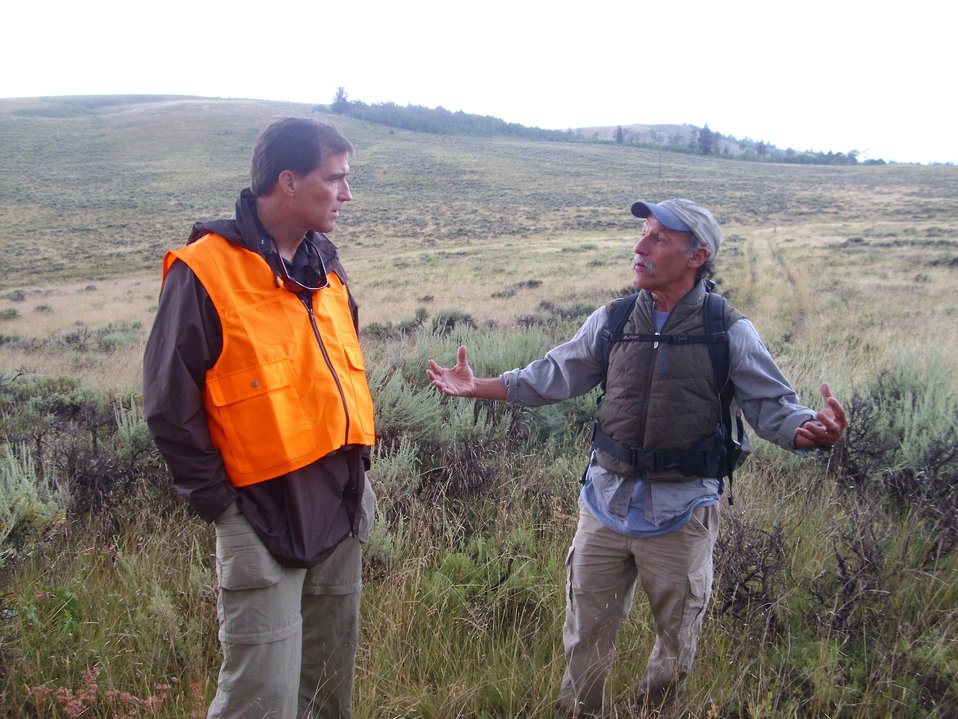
Dan on the National Elk Refuge

Wyoming Wolf Project Leader Mike Jimenez (right) explains gray wolf habitat needs to USFWS Director Dan Ashe at the National Elk Refuge.